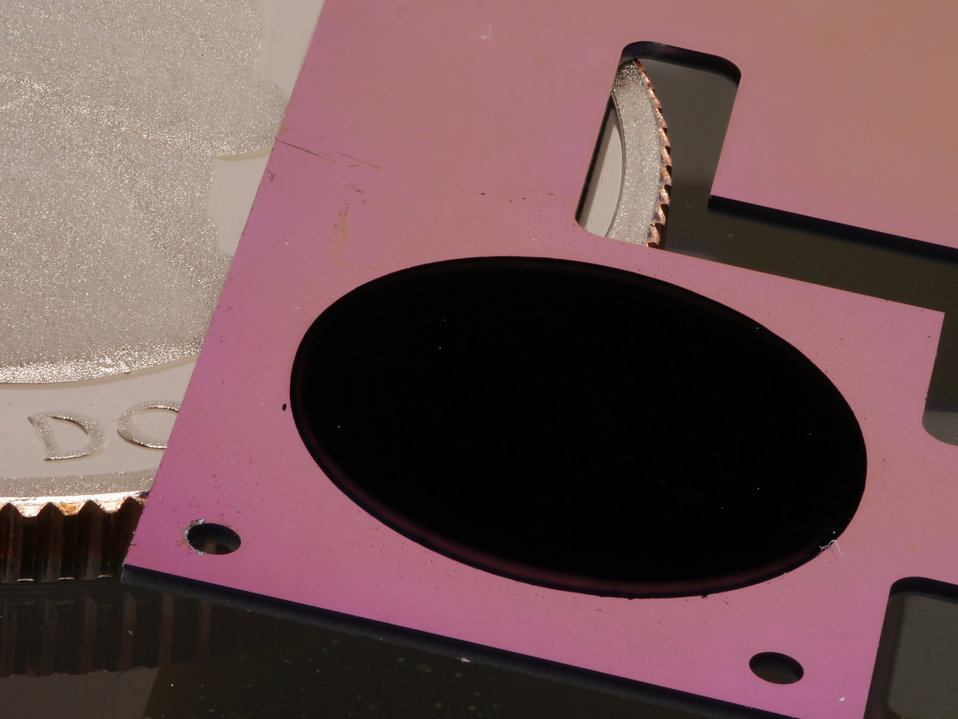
Nanotubes on a Chip

The circular patch of carbon nanotubes on a pink silicon backing is one component of NIST's new cryogenic radiometer, shown with a quarter for scale. Gold coating and metal wiring has yet to be added to the chip. The radiometer will simplify and lower the cost of disseminating measurements of laser power.